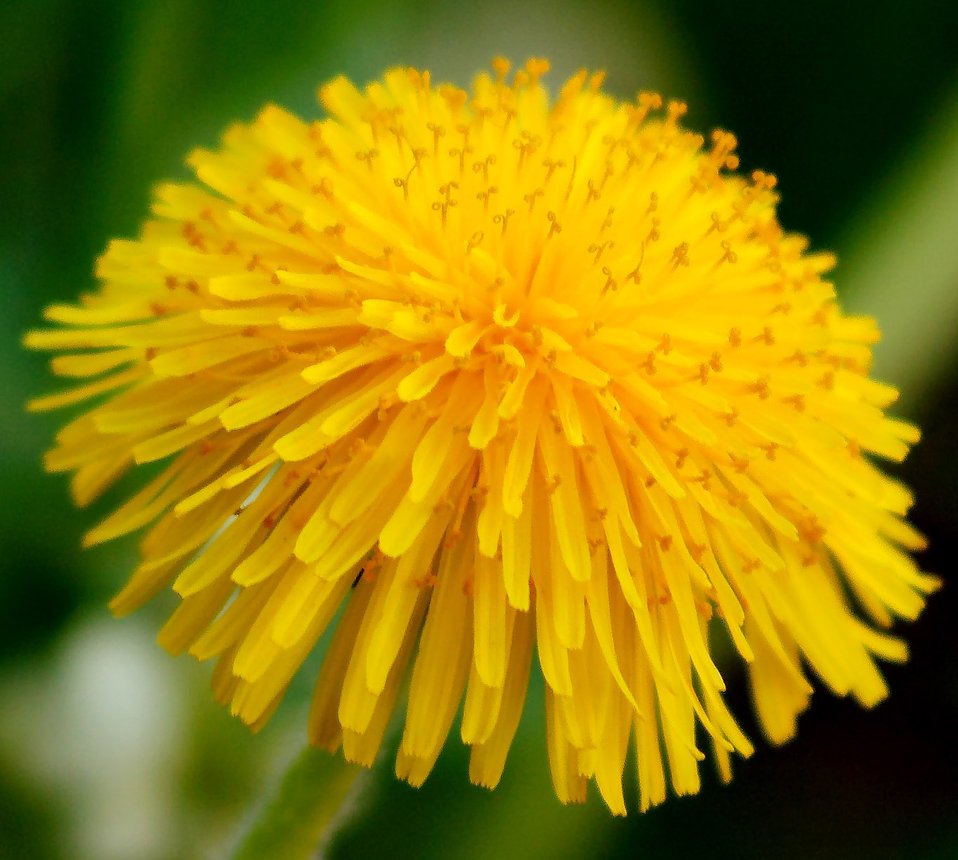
Self made picture of Dandelion flower head.